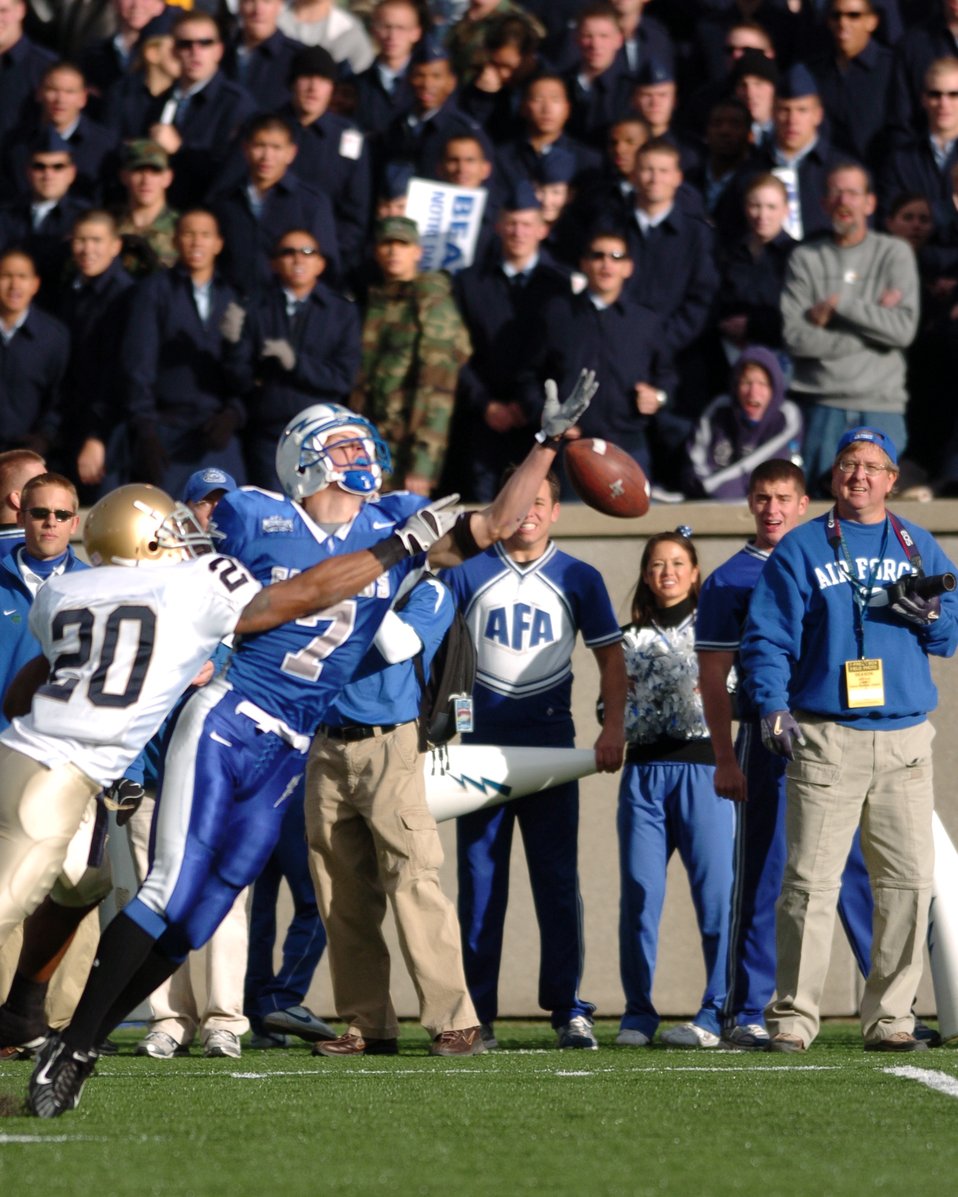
Prevent Defense

Notre Dame defensive back Terrail Lambert prevents Air Force receiver Mark Root from catching a pass from quarterback Shaun Carney. Lambert was penalized for pass interference on the play. Eighth-ranked Notre Dame won, 39-17.